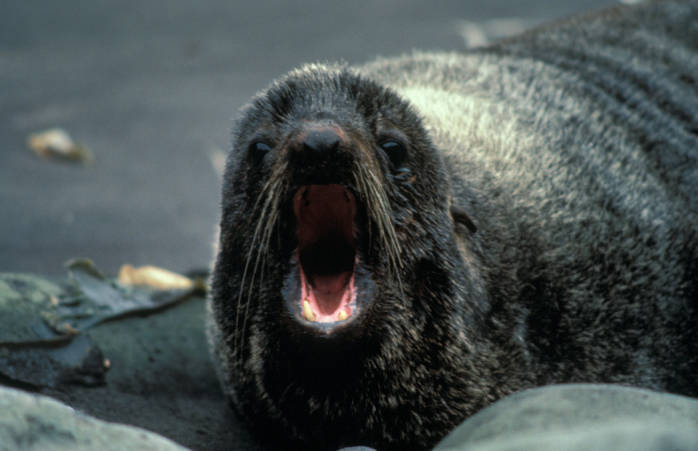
fur seal

Alaska Maritime National Wildlife Refuge